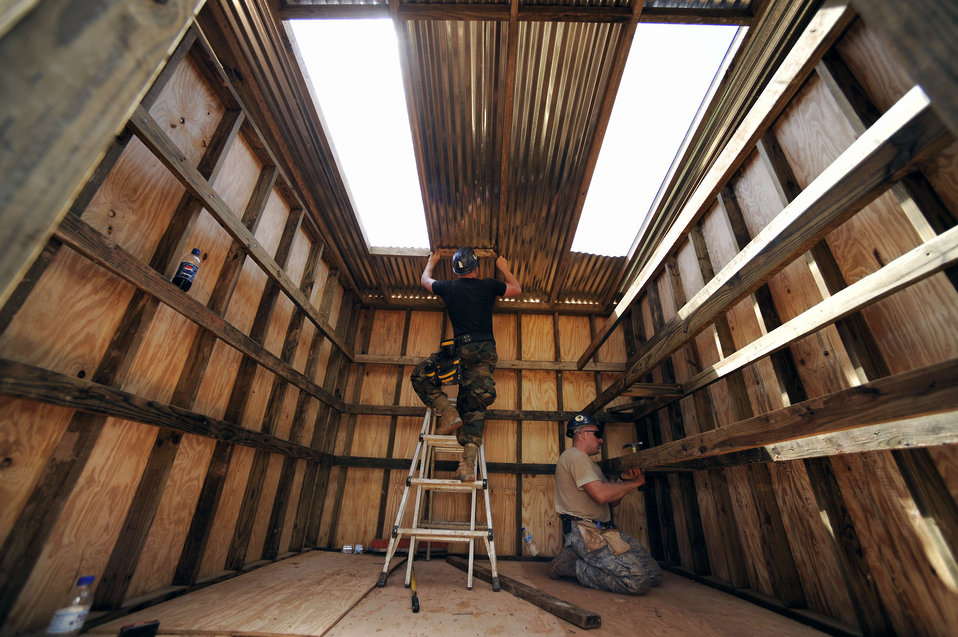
American servicemembers continue to provide promise

Airman Daniel Pauls and Staff Sgt. Bruce Hills build a shed for the All-in-One Development Center in support of Operation Continuing Promise 2008 Nov. 4 in Tunapuna, Trinidad and Tobago. Airman Pauls and Sergeant Hills are part of the Prime BEEF contingency group from Minot Air Force Base, N.D.